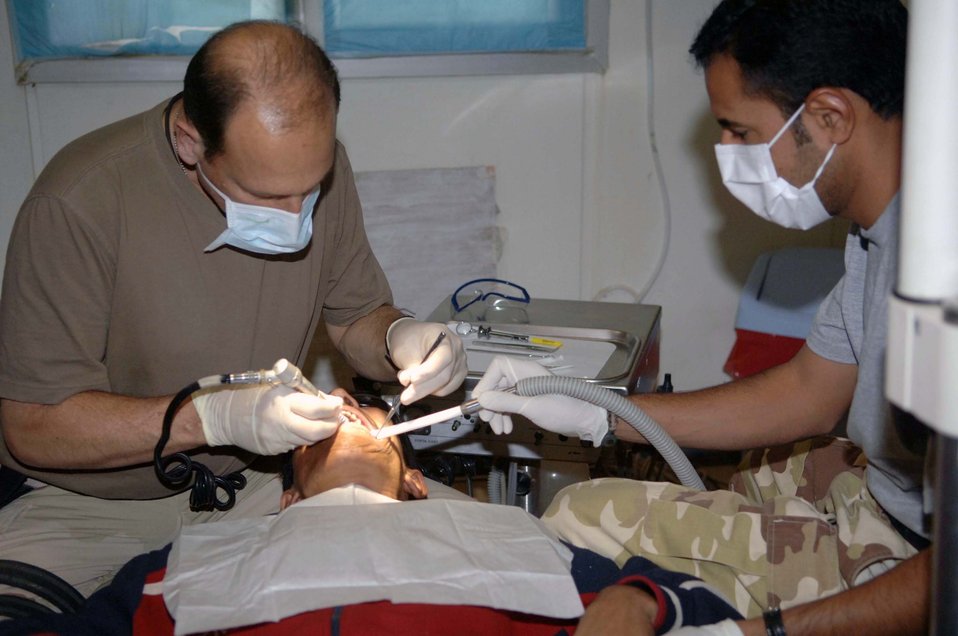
Air Force dental team cares for Iraqi counterparts

Lt. Col. Robert Beck performs a root canal with the assistance of an Iraqi dental technician Dec. 5 at Victory Base Complex, Iraq. The Iraqi soldiers work side by side with the Airmen during procedures to get hands on experience and guidance as they prepare to take over the clinic. Colonel Beck, a Special Operations Iraqi Transition Team dental adviser, is deployed from Offutt Air Force Base, Neb.